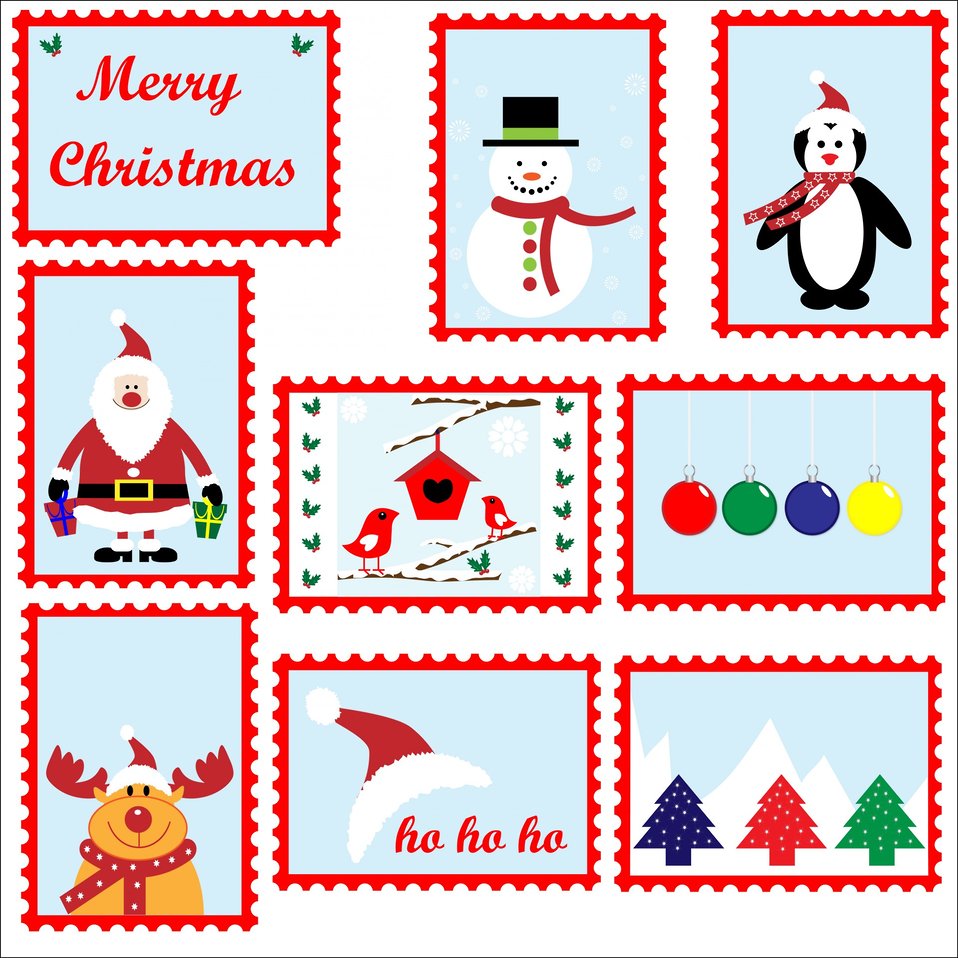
Christmas postage stamps template

Fun christmas postage stamps template.